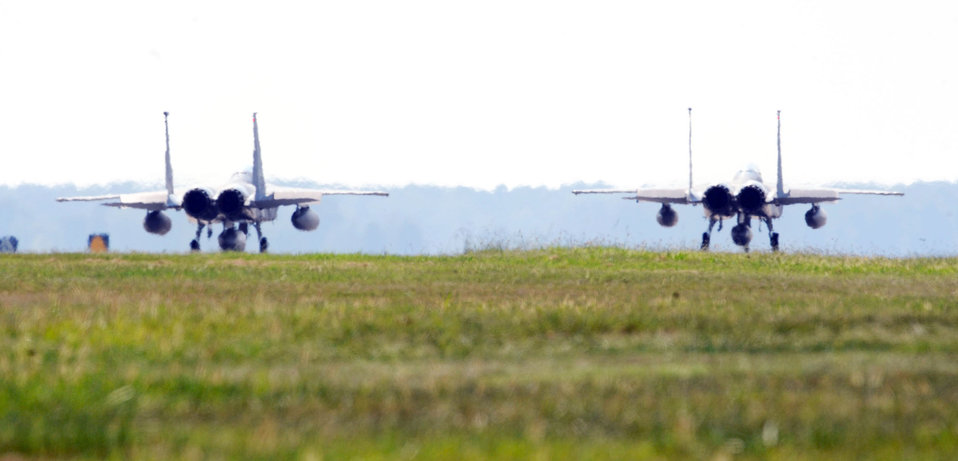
Final F-15 departs Langley, 71st FS prepares to inactivate

The last two operational F-15 Eagles departed Langley Air Force Base, Va., Sept. 1, 2010, for Portland, Ore.